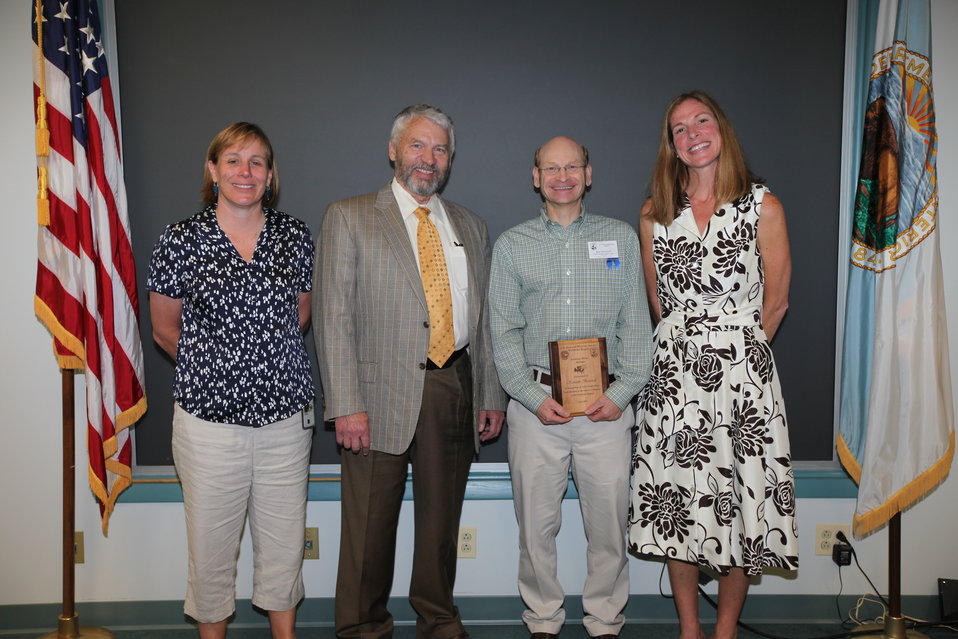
Kenneth Brownell from Engineering and Fisheries, recieved a Region 5 Unsung Hero Adward.
From left to right: Deputy Regional Director Deb Rocque, Deputy Director Rowan Gould, Kenneth Brownell and Regional Director Wendi Weber